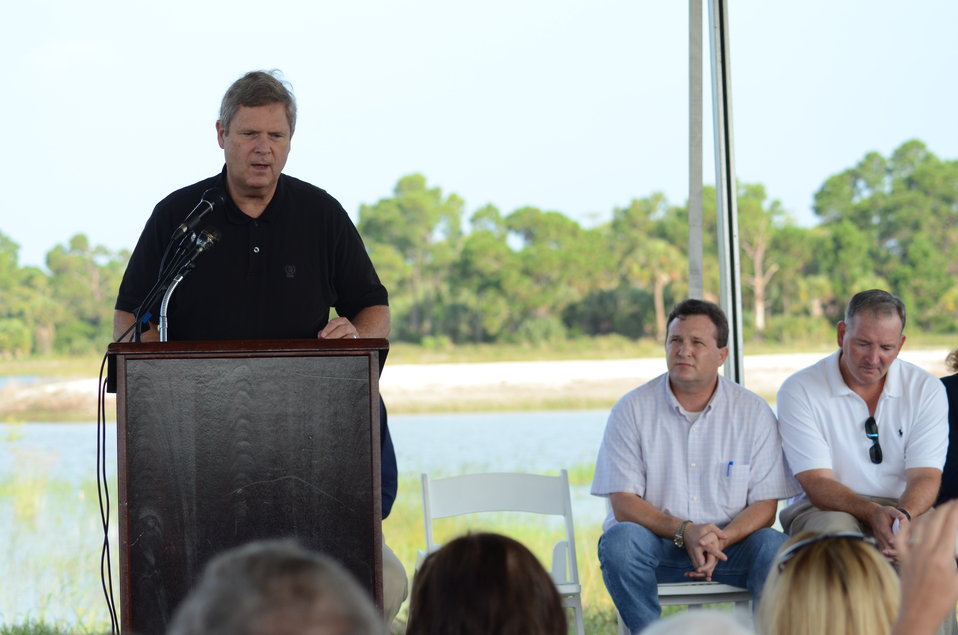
Agriculture Tom Vilsack makes remarks prior to participating in a signing ceremony in WEST PALM BEACH, Florida, August 11, 2011, with A.J. Suarez of Hendry County Nursery Farms-a landowner who will benefit from the $100 million in financial assistance to acquire permanent easements and assist with wetland restoration on nearly 24,000 acres of agricultural land in the Northern Everglades Watershed. Suarez signed an agreement with USDA to start the process to acquire the easement rights to 3,782 acres.